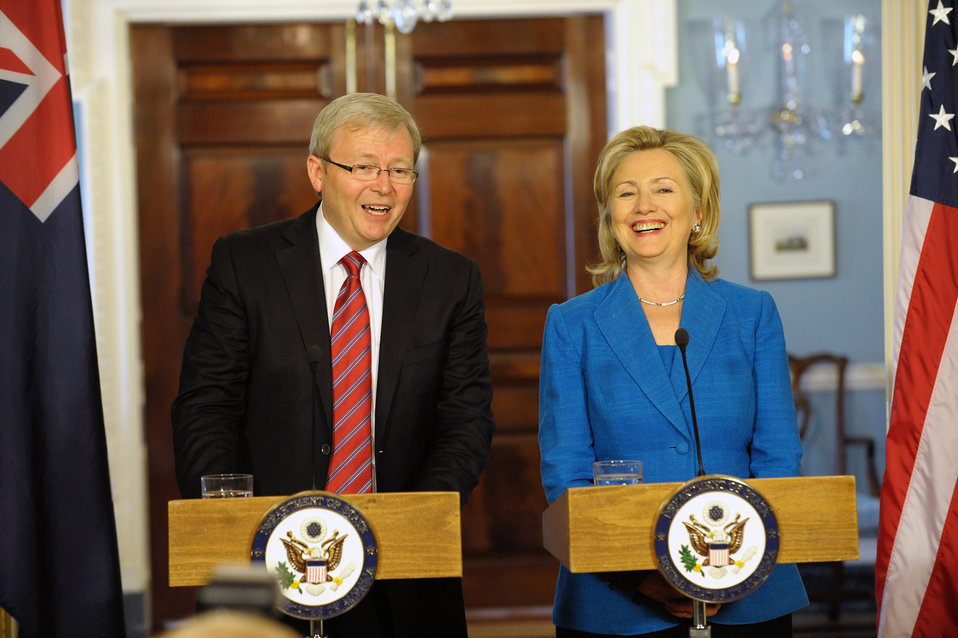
Secretary Clinton Holds a Joint Press Availability With Australian Foreign Minister Rudd

U.S. Secretary of State Hillary Rodham Clinton holds a joint press availability with Australian Foreign Minister Kevin Rudd following their bilateral meeting at the U.S. Department of State in Washington, D.C., on September 17, 2010.